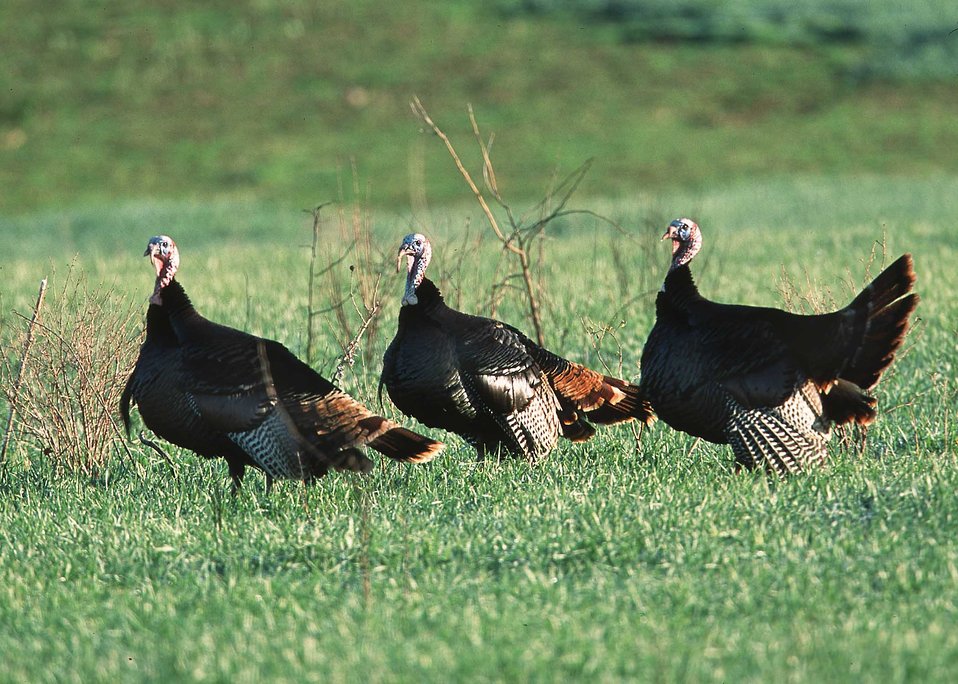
Wild turkeys in farm field near Manhattan, Kansas.